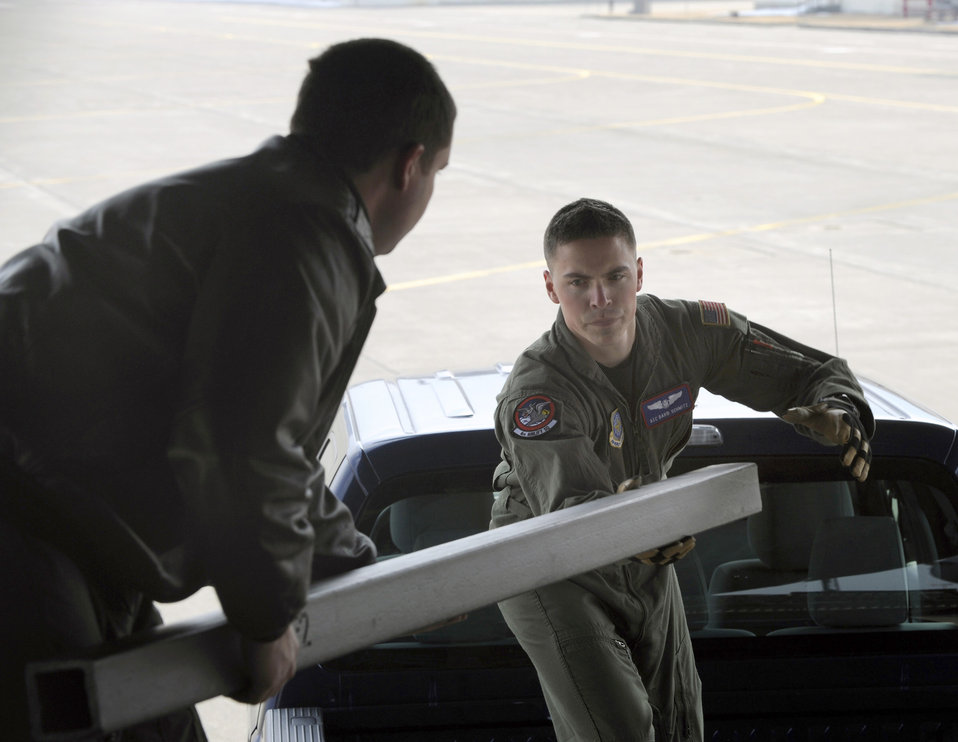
Emergency Response for Japan's Earthquake disaster

U.S. Air Force Airman 1st Class David Schmitz, Loadmaster with the 4th Airlift Squadron, McChord AFB Wash. loads spacers onto a pickup at Misowa Air Force Base, Japan during an emergency response on March 13, 2011. Aircrew from the 4th Airlift Squadron, McChord AFB, Wash. are transporting members and equipment for Los Angeles Search and Rescue team to Japan to aid in recovery and care of victims of the recent earthquake.